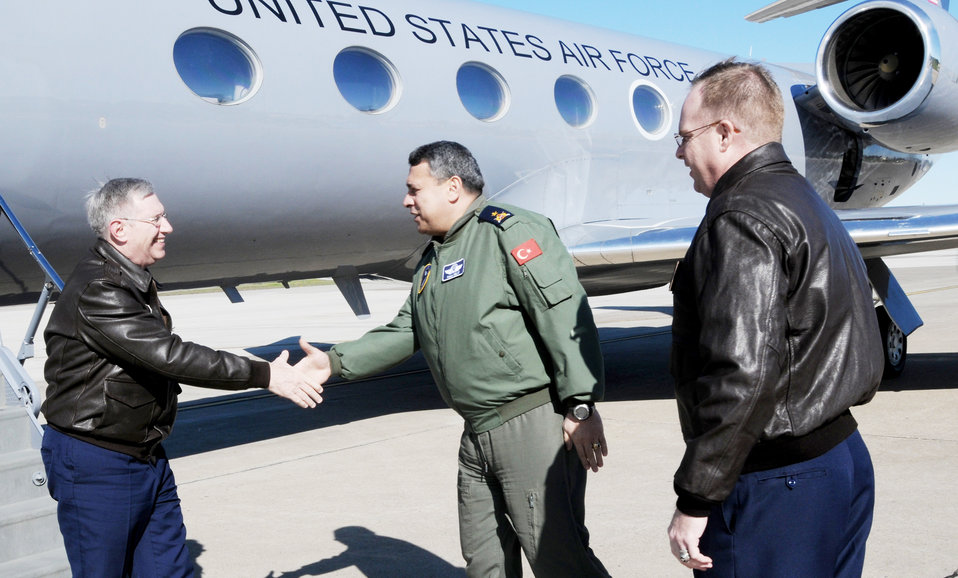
General visits Incirlik Airmen

Turkish air force Brig. Gen. Haluk Selvi (middle) and Col. Eric Beene (right) welcome Gen. Roger A. Brady to Incirlik Air Base, Turkey Jan. 25, 2010. General Brady and Chief Master Sgt. Pamela Derrow visited the base Jan. 25 through 26, 2010. General Selvi is the 10th Tanker Base commander. Colonel Beene is the 39th Air Base Wing commander. General Brady is the U.S. Air Forces in Europe commander. Chief Derrow is the USAFE command chief.